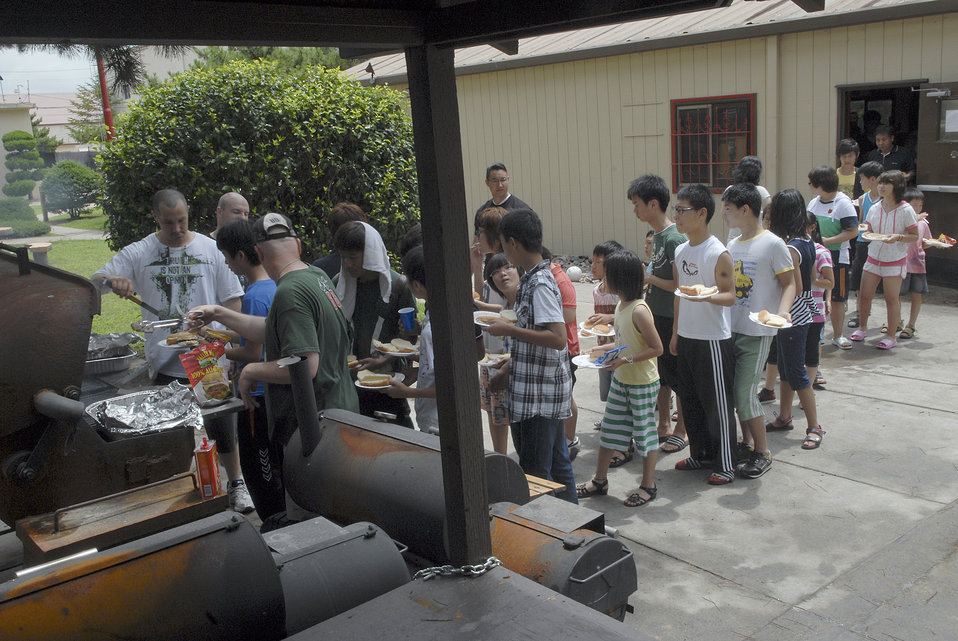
Kunsan Kid's Day

Volunteers serve hot dogs, hamburgers and chicken legs to children from the Il Mag Won Orphanage during a kid's day July 24, 2010, at Kunsan Air Base, South Korea.